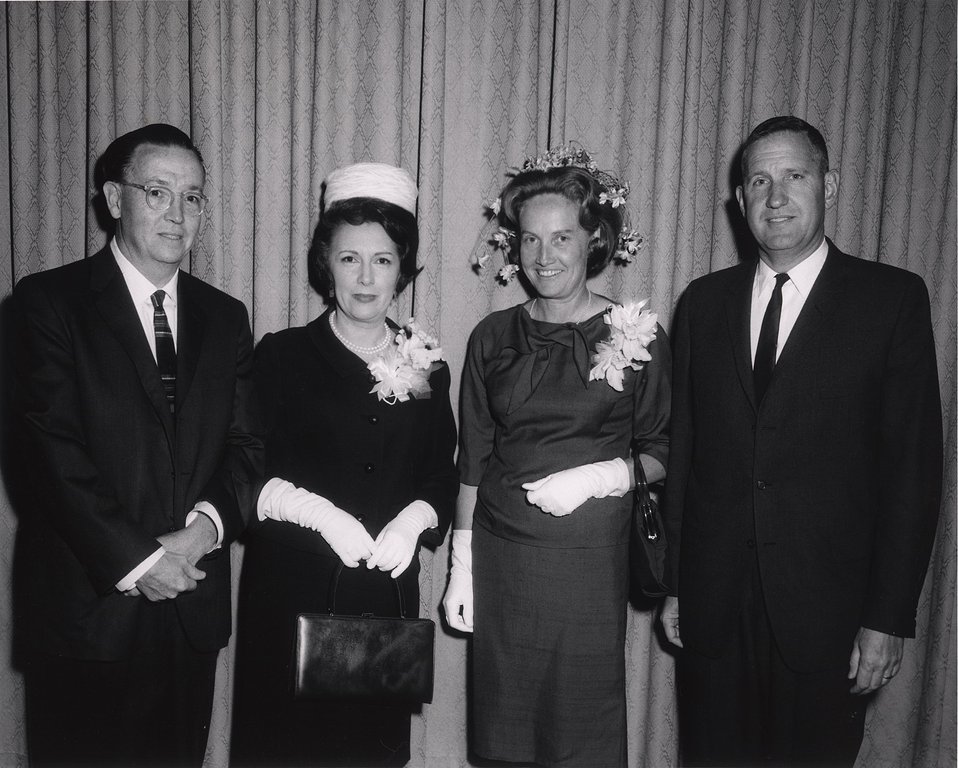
7th E.O. Lawrence Award Ceremony, April 27, 1966, Wash., D.C. Left to Right: Comm. & Mrs. Ramey, Mrs. Agnew, Dr. Agnew.